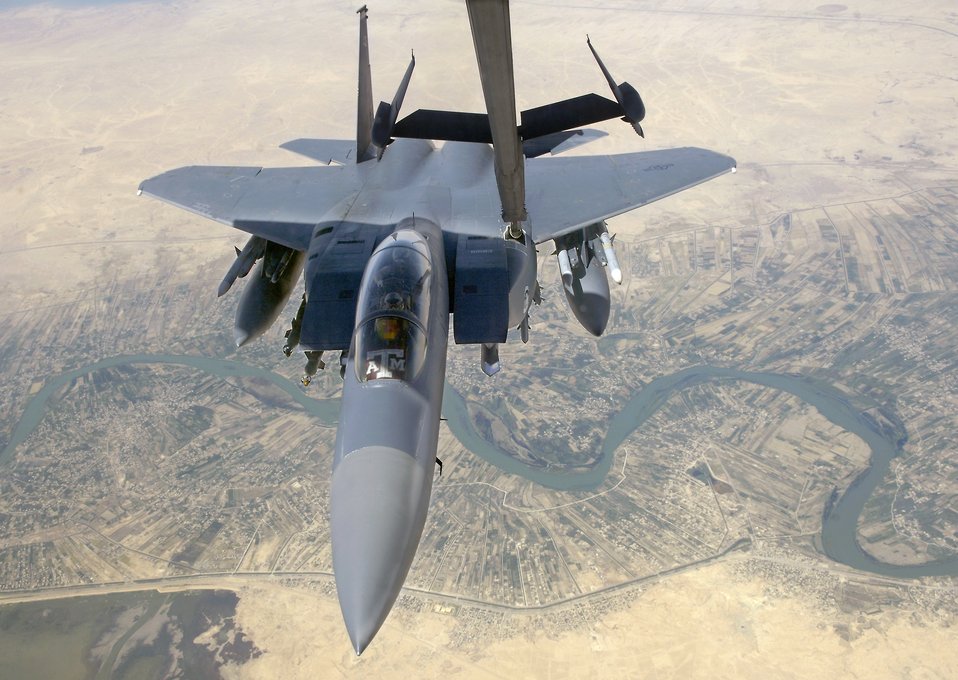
CENTAF airpower summary

F-15E Strike Eagles, similar to this one refueling over Iraq, play a critical role daily in providing close-air support to ground forces in contact with anti-Iraqi forces as part of Operation Iraqi Freedom.